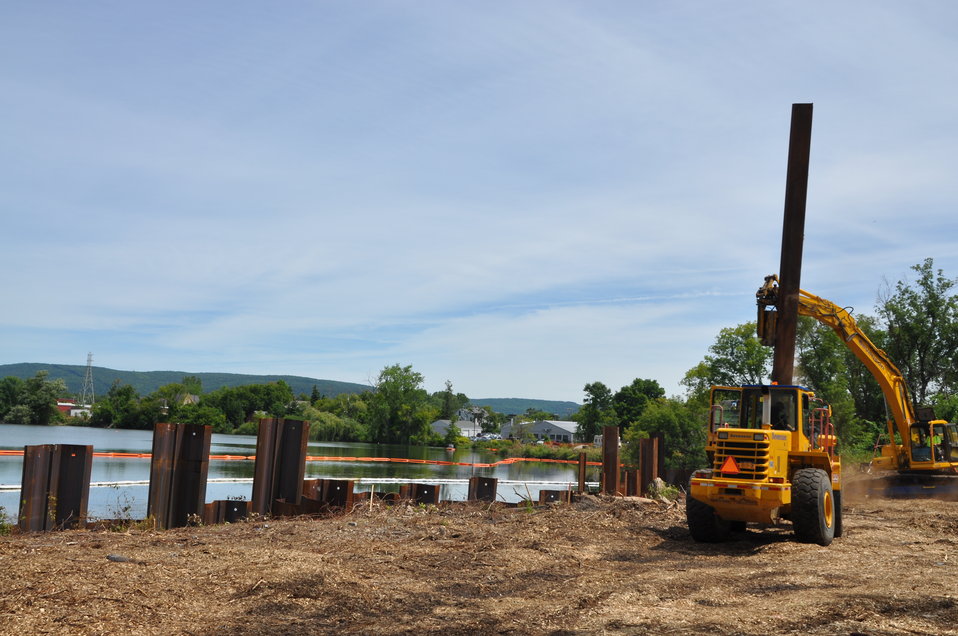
August 2012, Installation of sheet pile wall Silver Lake, Pittsfield, MA

Once the sheet pile is installed, work crews can begin the excavation of contaminated lake sediment.

At various spots along this small, but highly contaminated pond, soil from the bank, as well as sediment from around the perimeter is being removed through 2012.

Once the work around the shoreline is completed, work crews can begin to place the protective cap. Work is taking place with an eye toward future recreational use around Silver Lake.